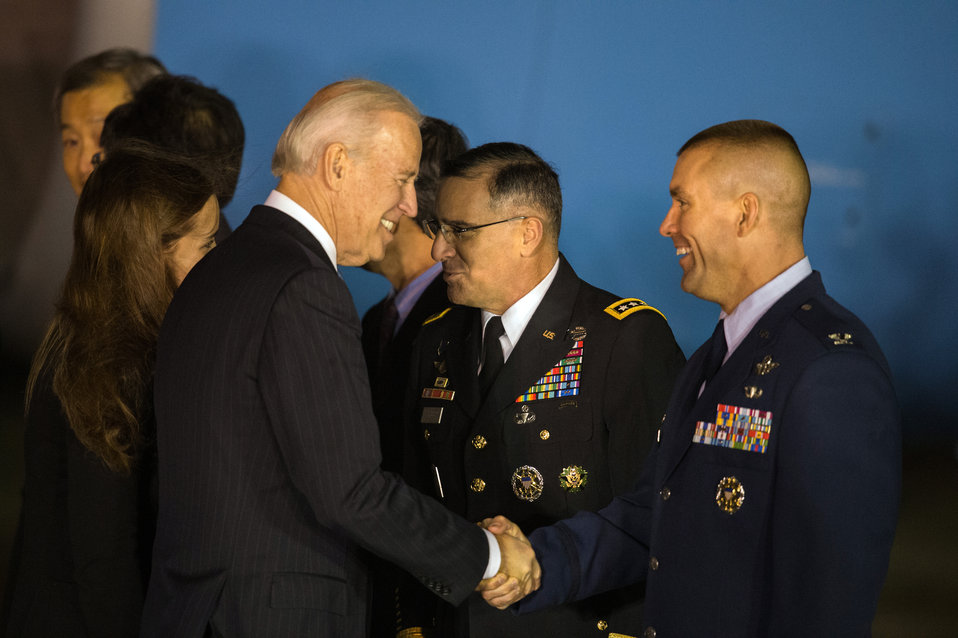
Vice President Biden Arrives in the Republic of Korea

Vice President Joseph Biden is welcomed by greeters upon arrival at Osan Air Base outside of Seoul, South Korea, on December 5, 2013.